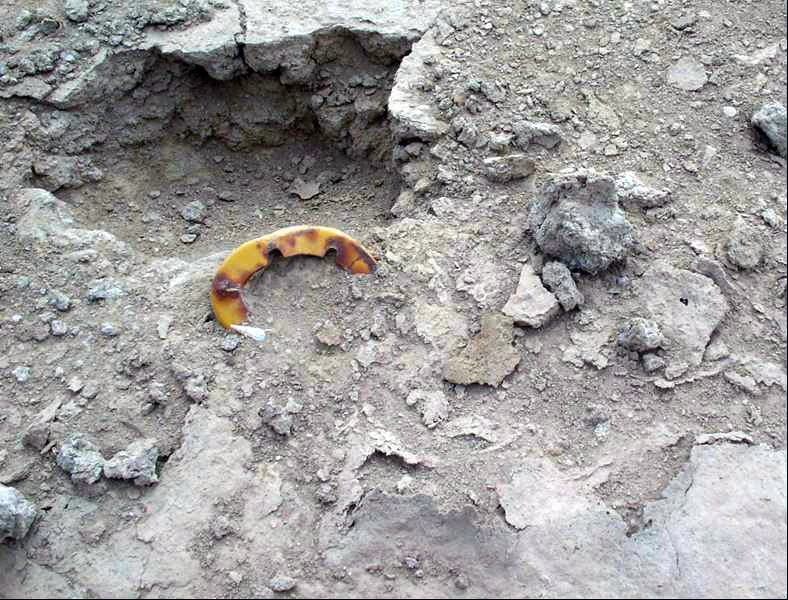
Hidden away

TALLIL AIR BASE, Iraq -- Unexploded ordnance lay partially hidden in the sand and pose a significant risk to people and resources here.